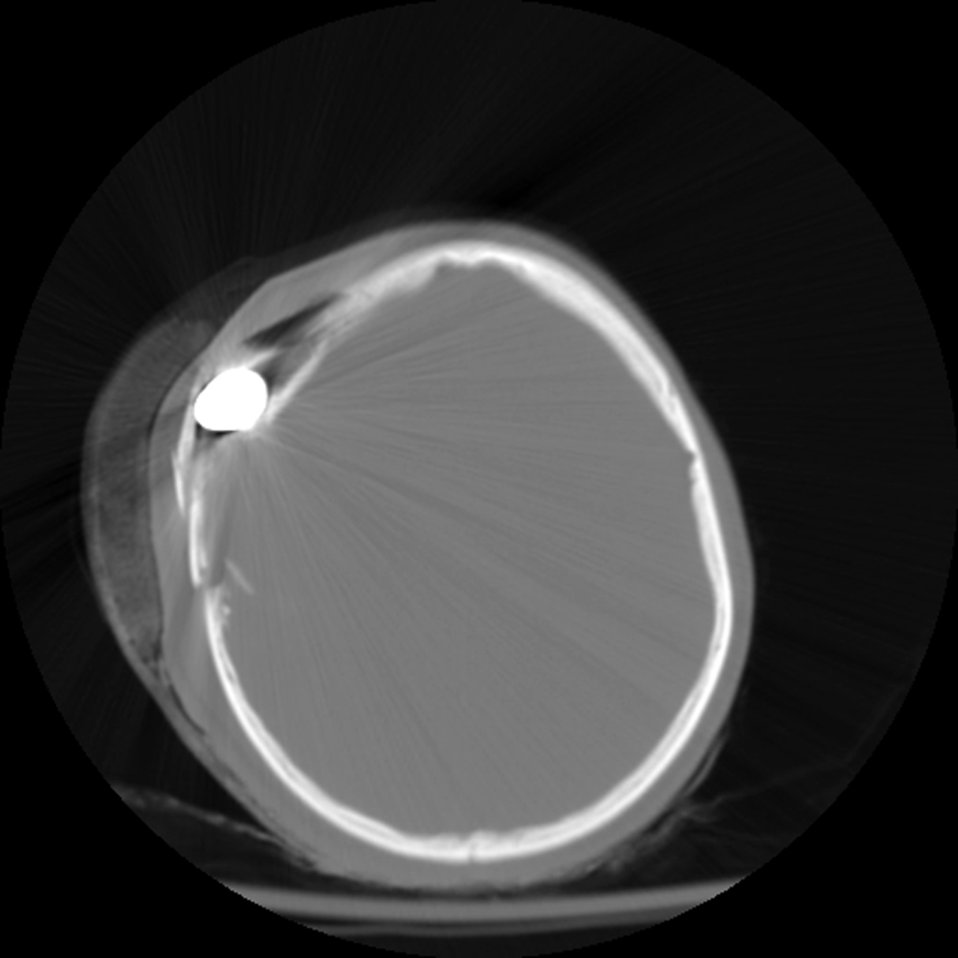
Bagram medics remove unexploded ordnance from patient

This computerized axial tomography scan image shows the placement of a 14.5 mm high explosive incendiary round that was removed from the scalp of an Afghan National Army soldier March 18, 2010, at the Craig Joint Theater Hospital at Bagram Airfield, Afghanistan. The injury was sustained during an improvised explosvie device attack.